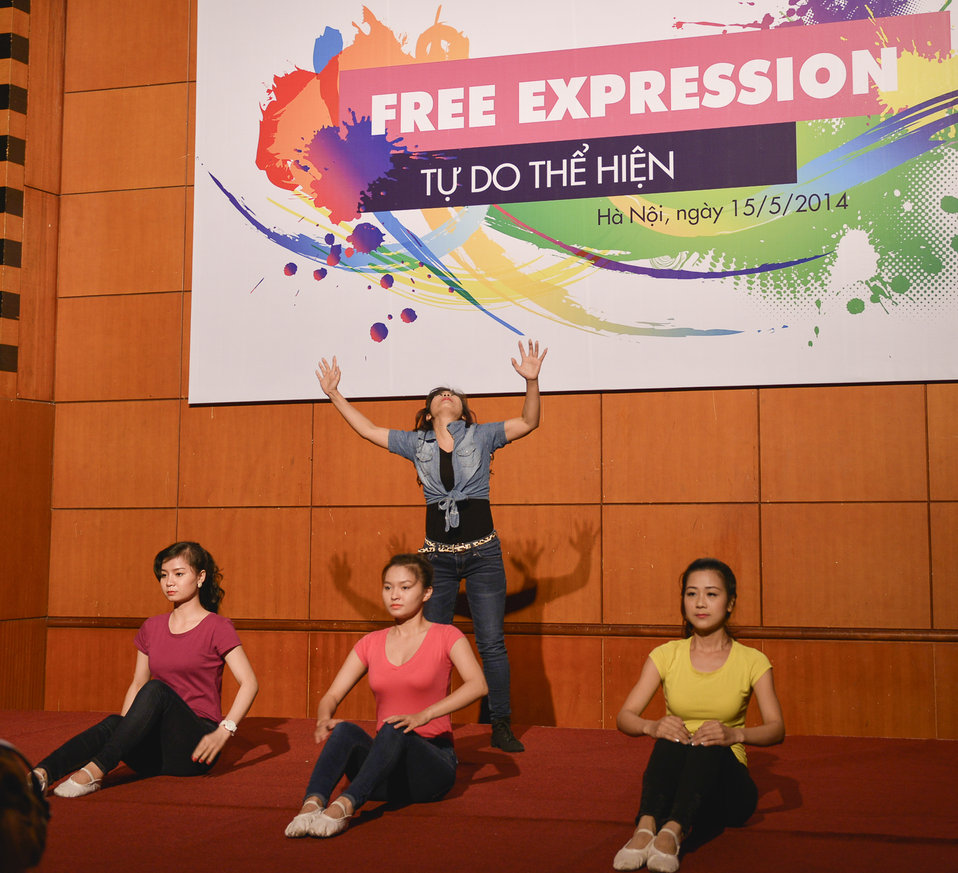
USAID supports celebration of IDAHOT Day 2014 in Hanoi

Hanoi, May 15, 2014.